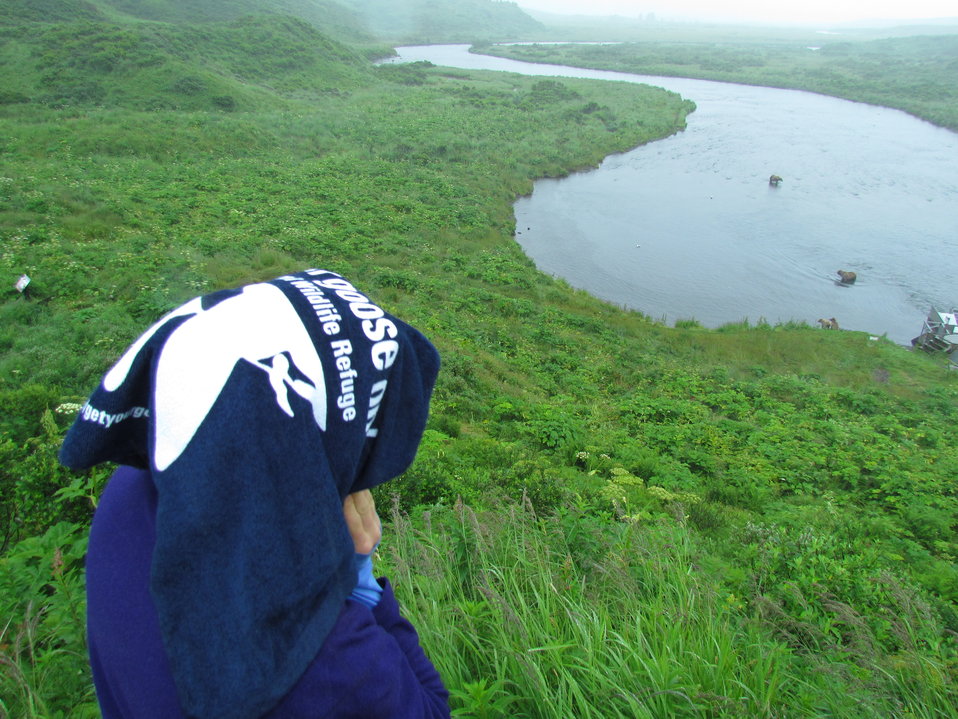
Get Your Goose On! - Alaska Style

YCC worker Iris Blakeslee with Kodiak Brown Bears in background.

Credit: Shelly Lawson / USFWS

The Kodiak National Wildlife Refuge is a United States National Wildlife Refuge in the Kodiak Archipelago in southwestern Alaska, United States.

The Kodiak National Wildlife Refuge includes the southwestern two-thirds of Kodiak Island, Uganik Island, the Red Peaks area of Afognak Island and all of Ban Island in the archipelago. It encompasses 1,990,418 acres (8,054.94 km2).[2] The refuge is administered from offices in Kodiak.

The refuge contains seven major rivers and about 100 streams. It is a spawning ground for all six species of Pacific Ocean salmon, trout and several other fish species, as well as a nesting ground for 250 species of bird, many of which feed on salmon. The refuge has only six native species of mammals: Kodiak brown bear, red fox, river otter, ermine, little brown bat and tundra vole. The non-native mammals Sitka deer, mountain goat, Roosevelt elk, snowshoe hare and beaver were introduced to the archipelago between the 1920s and 1950s and are now hunted and trapped.

The climate of the refuge is that of southern Alaska, mild and rainy. Many areas in the refuge are densely forested with Sitka Spruce at lower elevations. There are grasslands in drier areas and at higher elevations. The refuge contains several small glaciers.